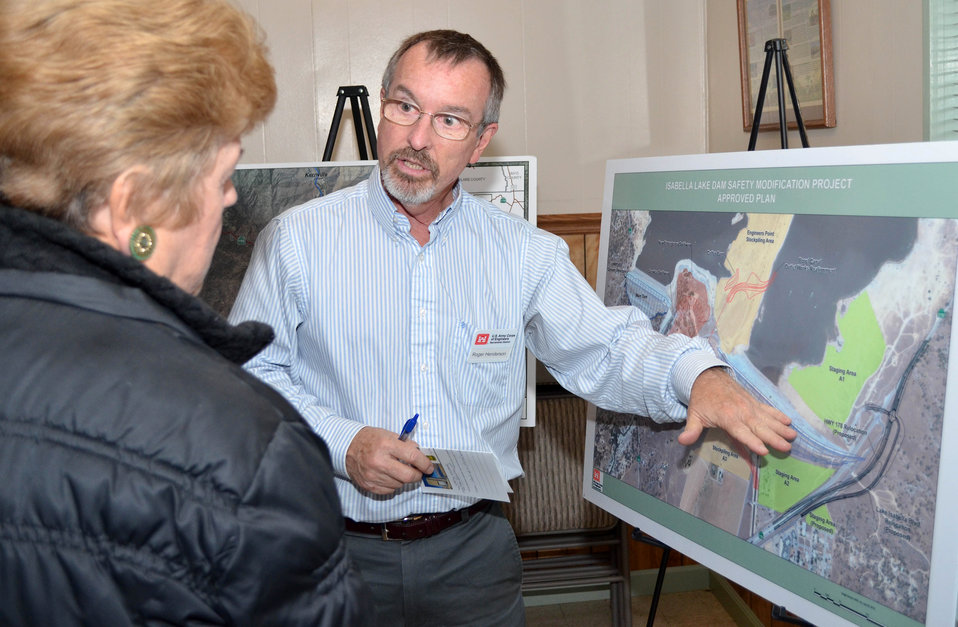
Corps talks recreation with Isabella Lake Dam communities

Roger Henderson, a lead engineer for the U.S. Army Corps of Engineers Sacramento District, discusses some of the modifications the Corps will make to the Isabella Lake dams during a public meeting Sept. 25, 2013, in Kernville, Calif. The Corps held the public meeting to talk with local residents and business operators about how construction of the dam safety modification project will temporarily impact recreation at the lake, and listen to their ideas for solutions to reduce those impacts. The Corps will release their findings in a draft recreation plan, which is scheduled for release in December 2013.